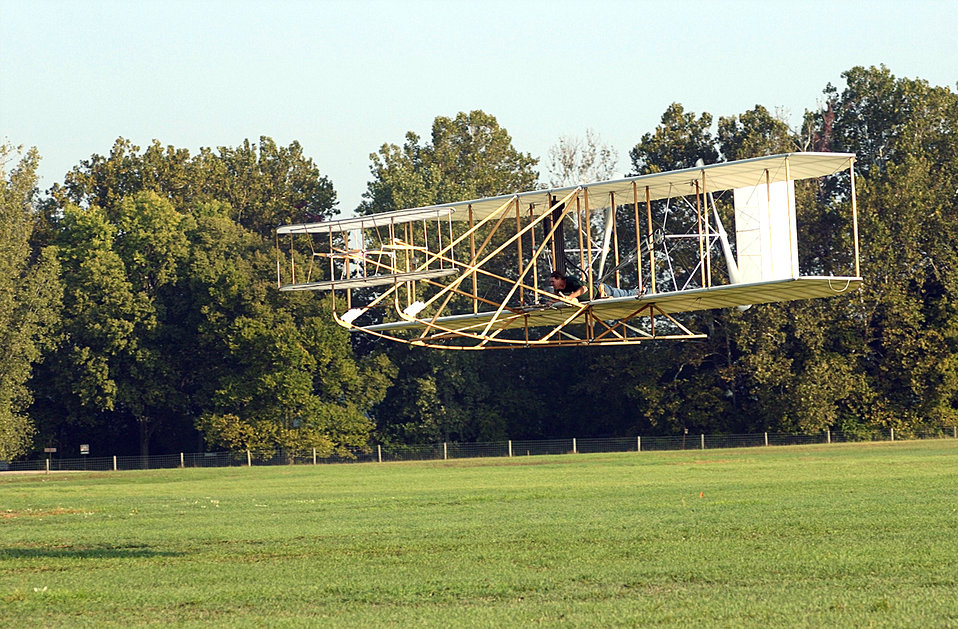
Wright-Patterson celebrates an essential step in aviation

WRIGHT-PATTERSON AIR FORCE BASE, Ohio -- Mark Dusenberry flies over Huffman Prairie during the Centennial of Practical Flight ceremony Oct. 5. Orville and Wilbur Wright used the field to research and develop their aircraft, and flew over the same location 100 years earlier to the day. Mr. Dusenberry is the pilot and creator of the world's only exact replica of the 1905 Wright Flyer.